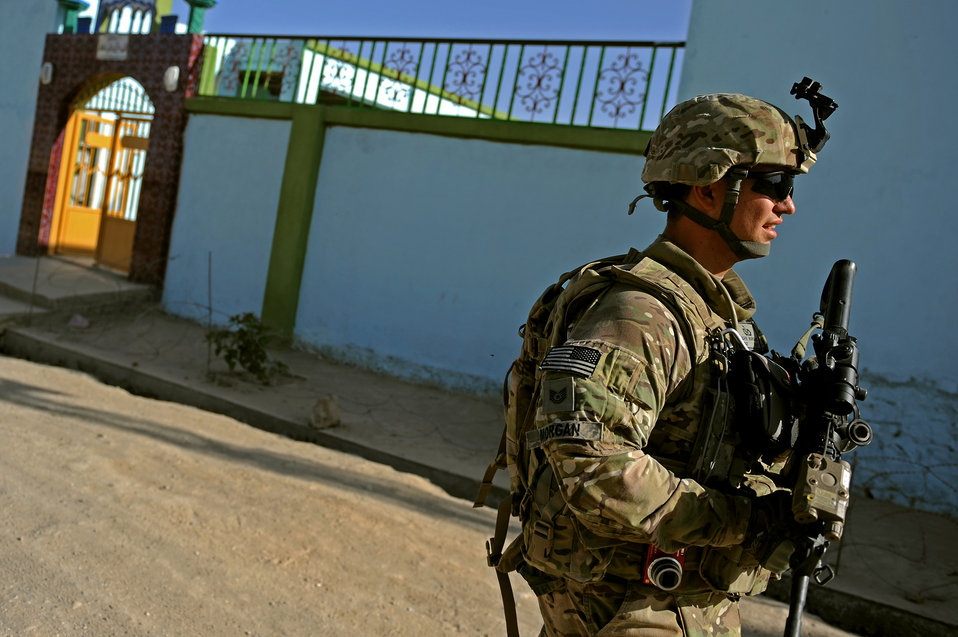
The road to a better Afghanistan

Tech. Sgt. John Morgan patrols specific locations Sept. 25, 2011, to provide quality assurance for road projects in Qalat City, Afghanistan. Morgan is a civil engineer with Provincial Reconstruction Team Zabul.